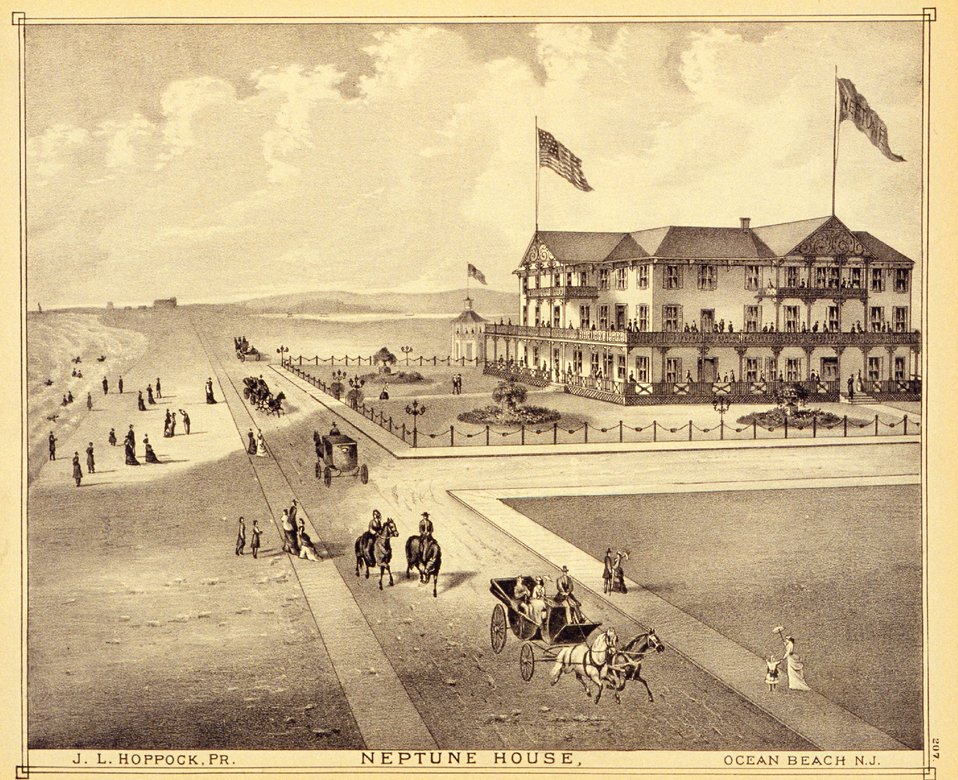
Neptune House, Ocean Beach, New Jersey. P. 207. 'Historical and Biographical Atlas of the New Jersey Coast,' by T. F. Rose, 1878.